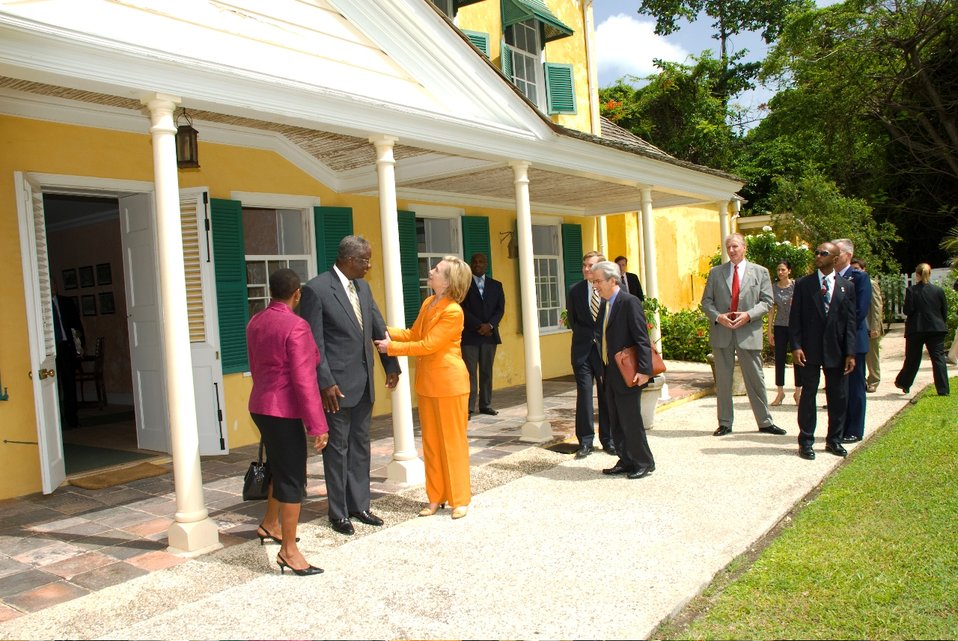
Secretary Clinton Shakes Hands With Barbadian Acting Prime Minister Freundel Stuart

U.S. Secretary of State Hillary Rodham Clinton, right, shakes hands with Barbadian Acting Prime Minister Freundel Stuart during a visit to the restored George Washington House in St. Michael Parish, outside Bridgetown, Barbados, on June 10, 2010.